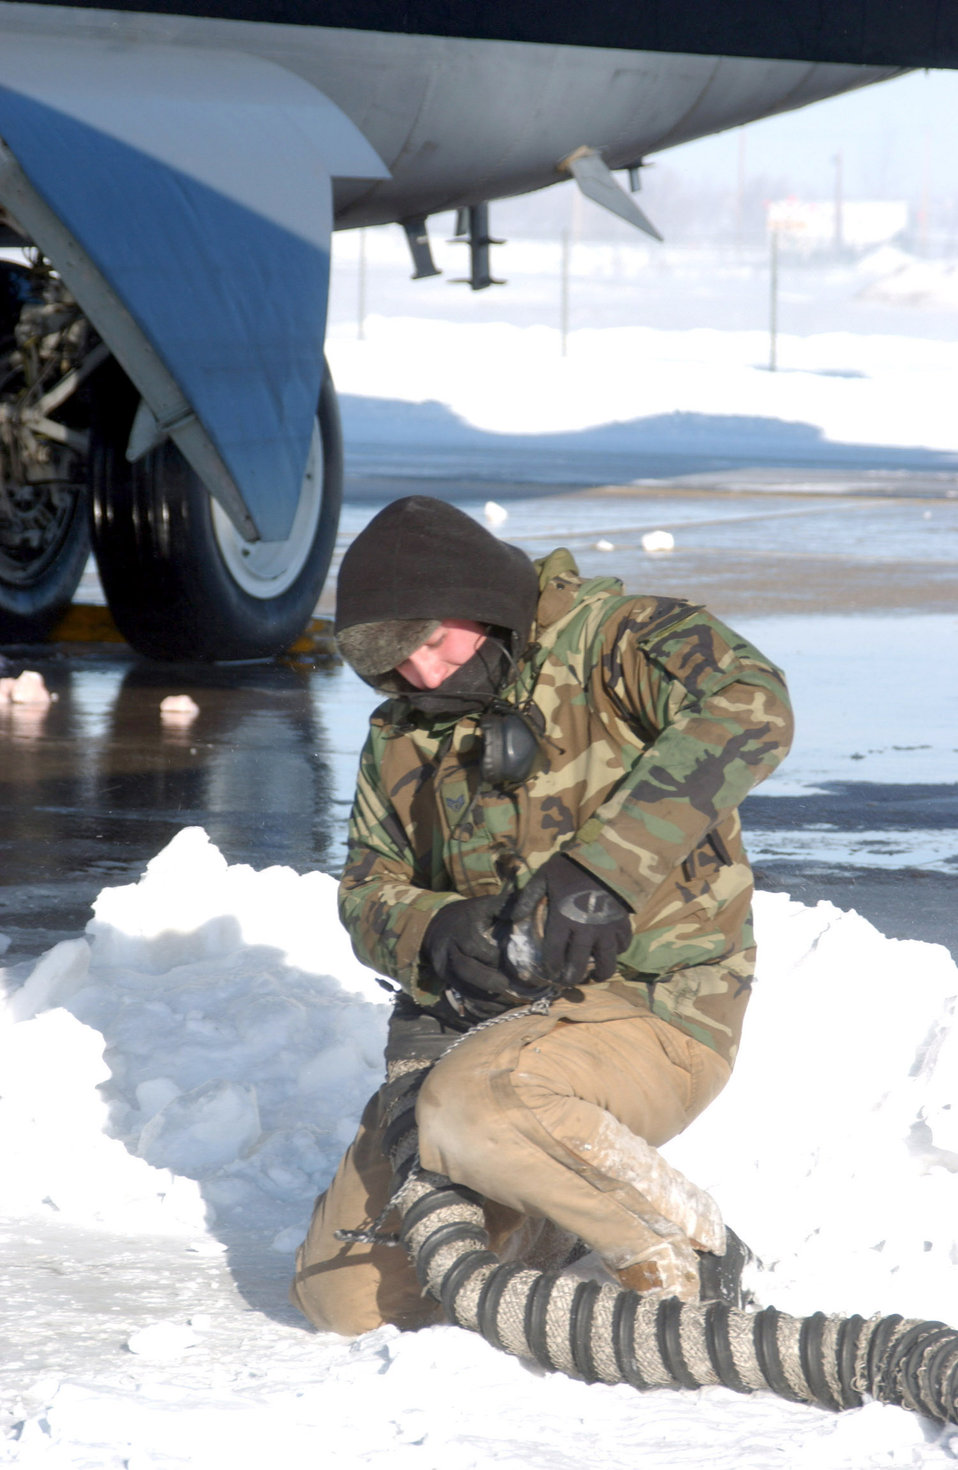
It's a 'brr-r-rrtiful' new year

MINOT AIR FORCE BASE, N.D. -- Senior Airman Zachary Miller disconnects the air source from a B-52H Stratofortress. Temperatures here recently averaged minus 20 degrees with wind chill. Miller is assigned to the base's 5th Aircraft Maintenance Squadron.